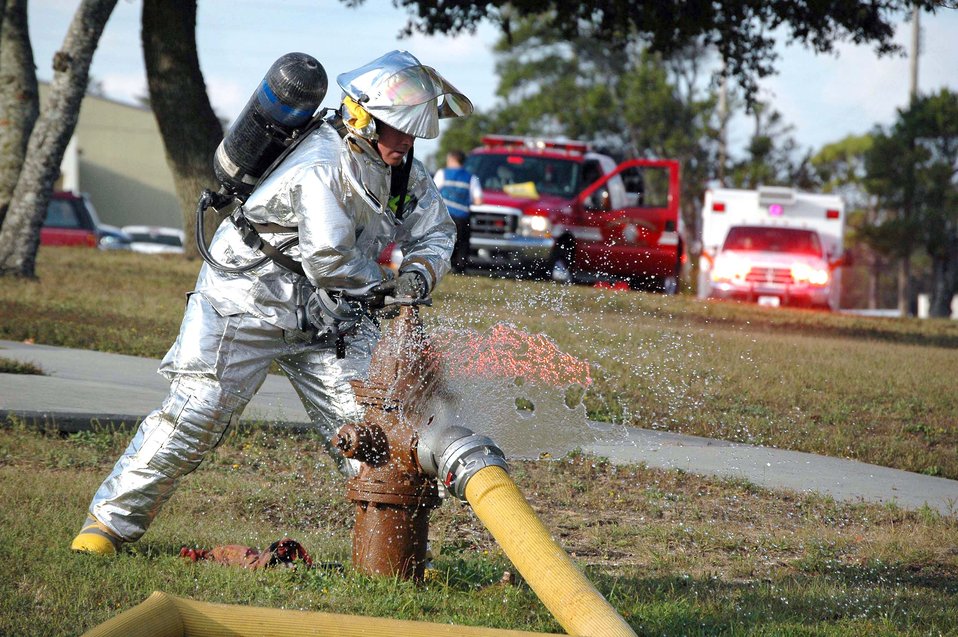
Watered down

EGLIN AIR FORCE BASE, Fla. (AFPN) -- Firefighter Staff Sgt. Jeremy Rath turns on a fire hydrant to fill a fire truck with water during a fire alarm response at the health and wellness center here. The 96th Civil Engineer Squadron's Station 1 responded when the sprinkler system came on inside the sauna room Nov. 7. Fortunately, there was no fire.